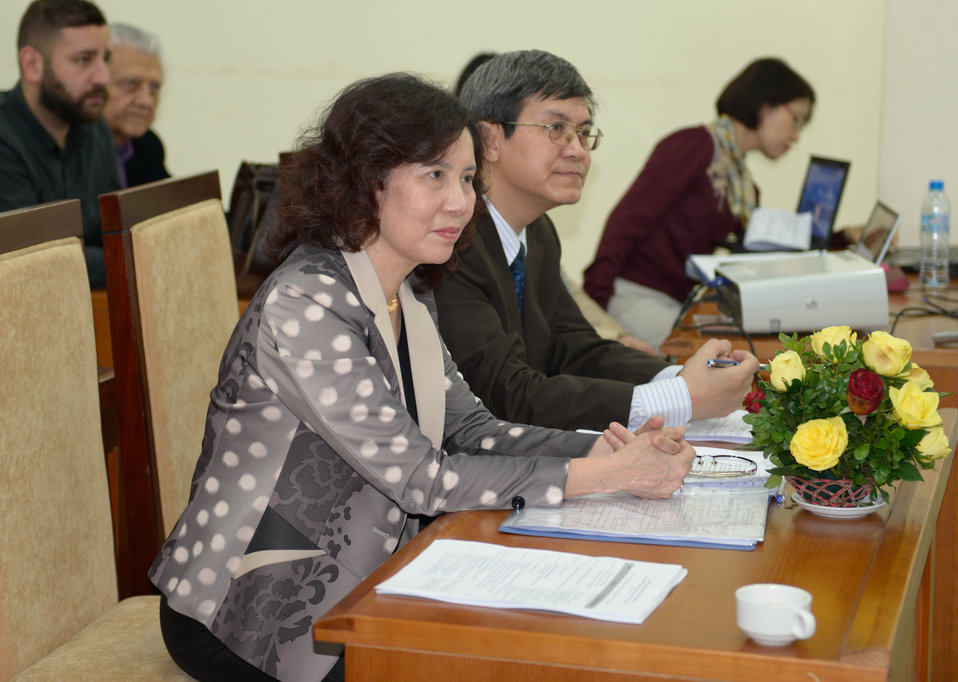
International Women's Day Seminar for female entrepreneurs

Phu Tho, Vietnam. March 1, 2014.